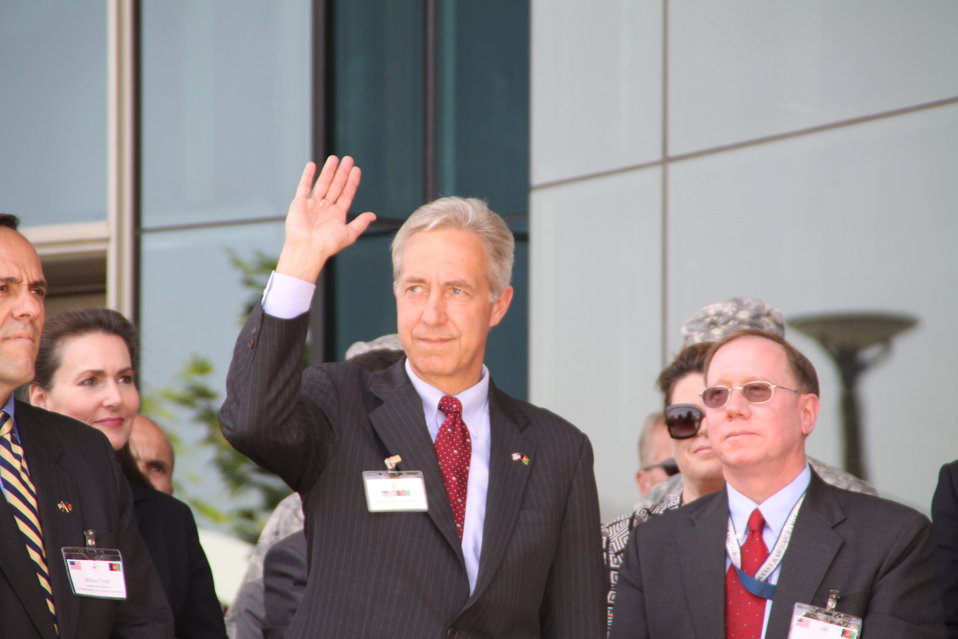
Kabul Official July 4th Celebration